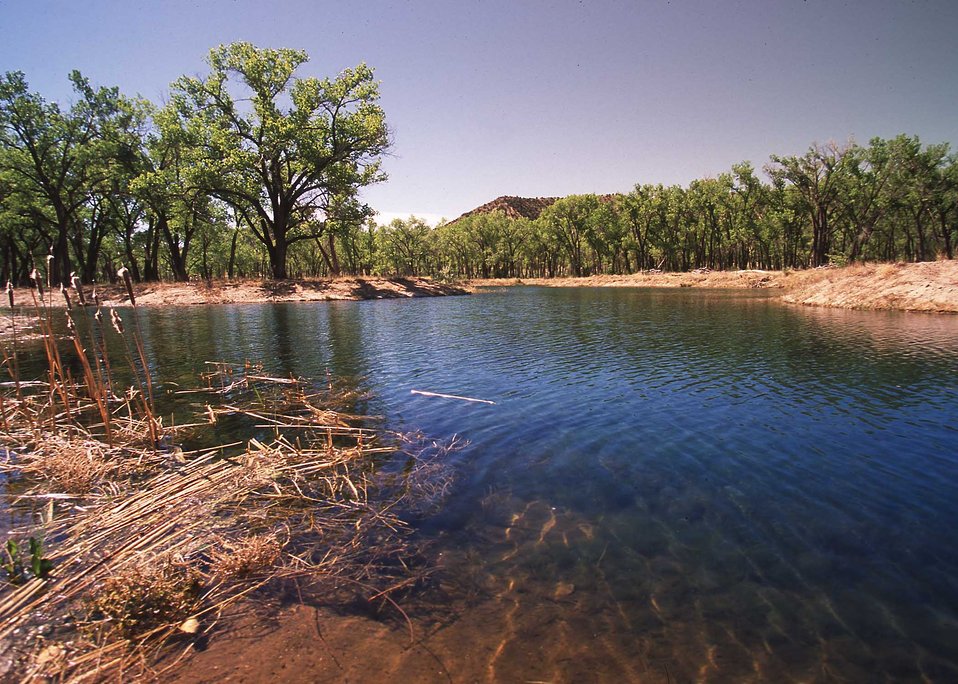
Wetland pond in Sante Fe County installed with NRCS assistance.